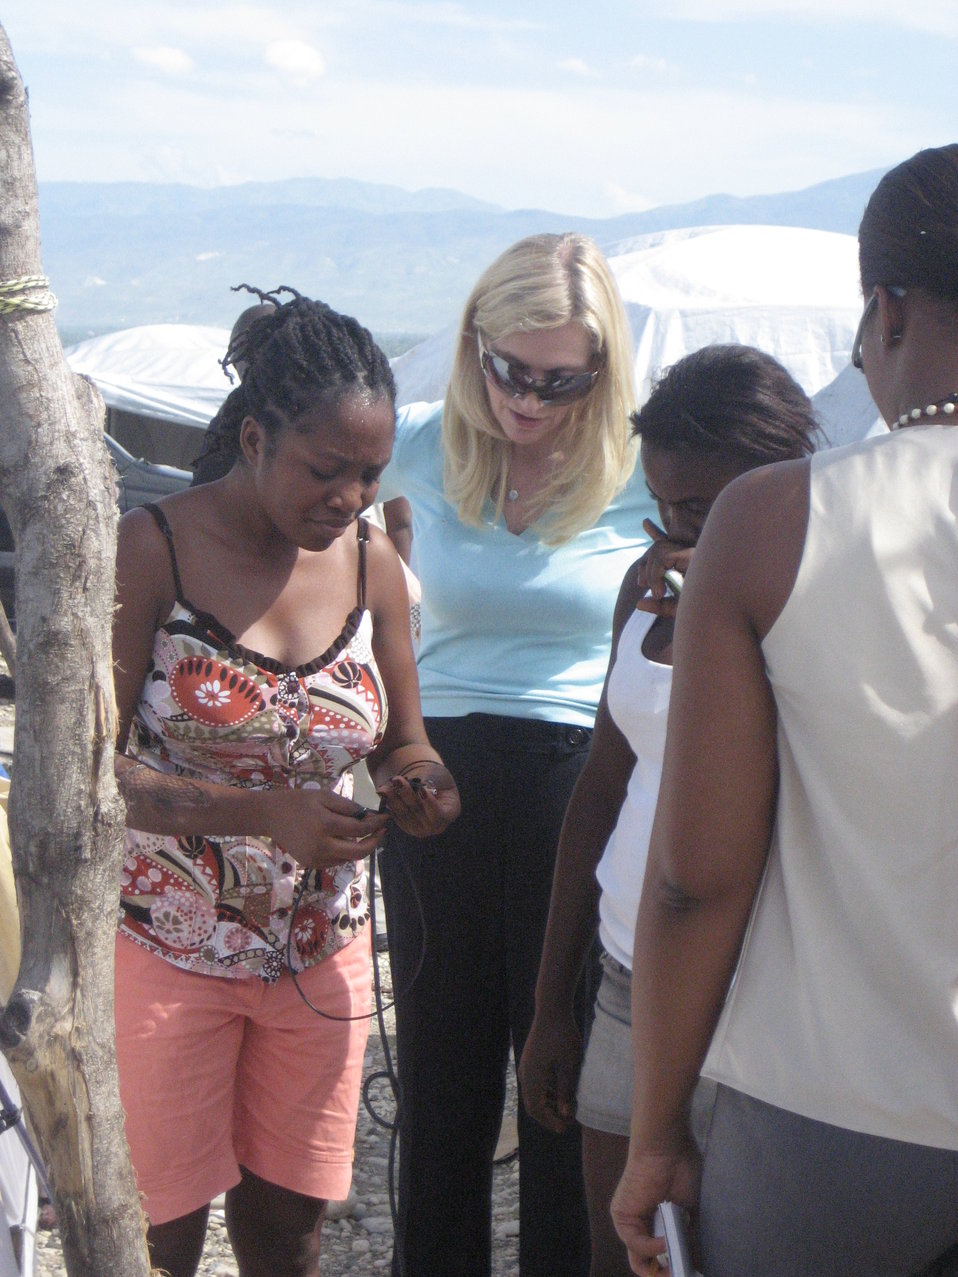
Under Secretary Lael Brainard visits Haiti, 7/29/2010

Under Secretary Lael Brainard in Haiti with a resident of the tent camp powered by solar lanterns provided by the World Bank.